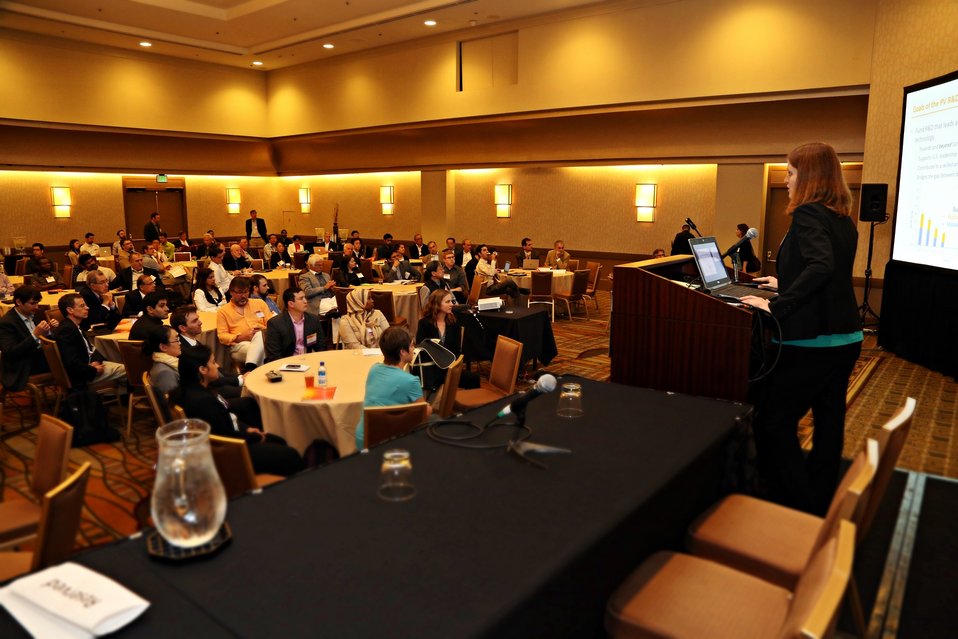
Day 2 Subprogram Overviews 3

Dr. Becca Jones-Albertus, Photovoltaics Program Manager speaks at a SunShot Subprogram Overview session.